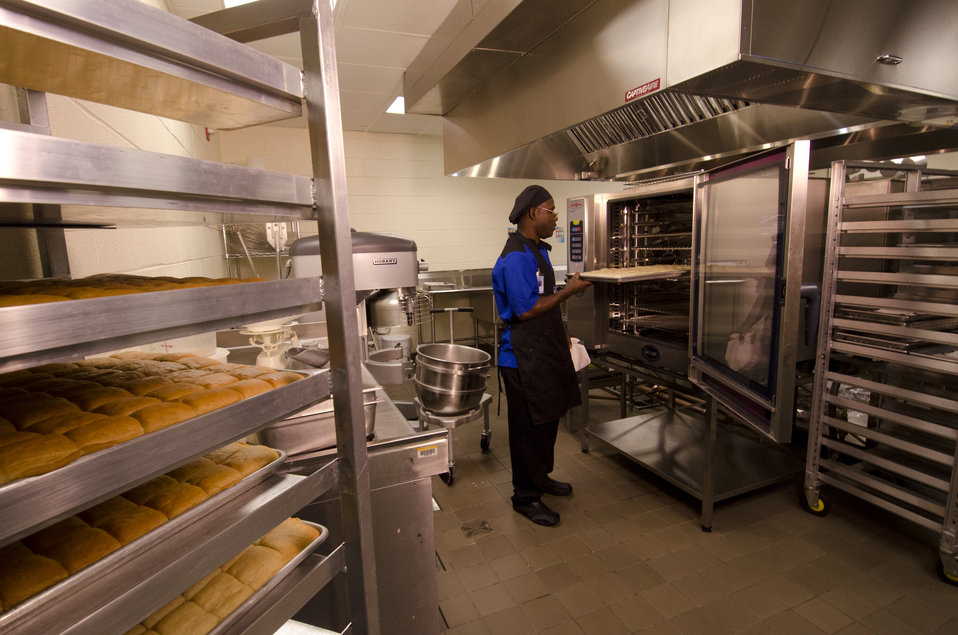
School lunch staff and students enjoy the new school lunch menu created to meet the new standards at the Yorkshire Elementary School in Manassas, VA on Friday, Sept. 7, 2012.